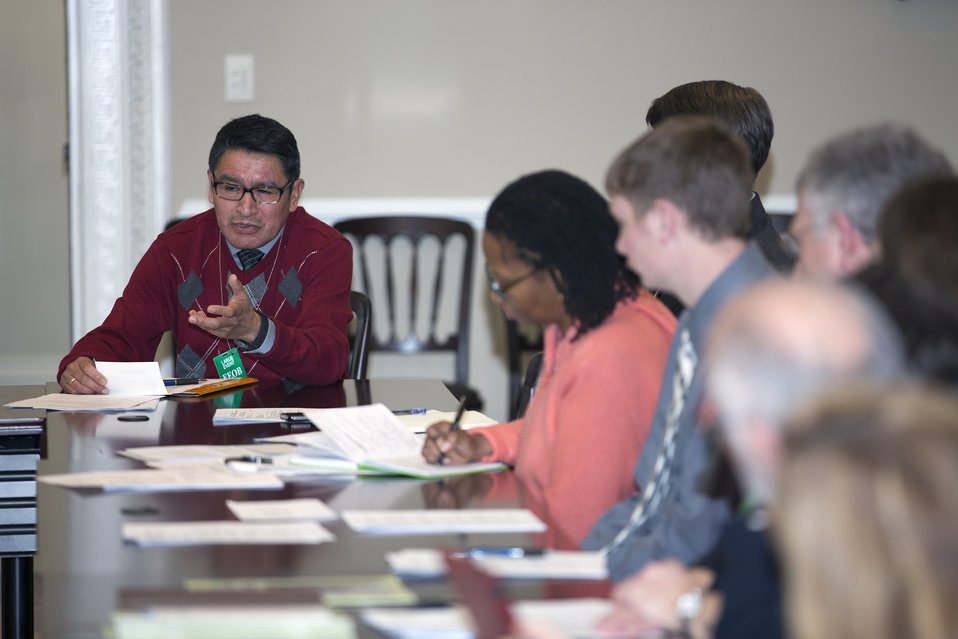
Forest Grove, OR Adelante Agricultura Program at Adelente Mujeres Director Alejandro Tecum discusses increasing healthy food access at a White House Rural Council forum on healthy food access, local food and economic development on Tuesday, Feb. 4, 2014 at the White House in Washington D.C. Adelente Mujeres is training immigrant farmers to participate in farmers markets, mobile markets and other community based strategies to increase healthy food access in rural Oregon. Many of Adelente Mujeres’ efforts have been funded via the U.S. Department of Agriculture's (USDA) Farmers Market Promotion Program and the Specialty Crop Block Grant Program.